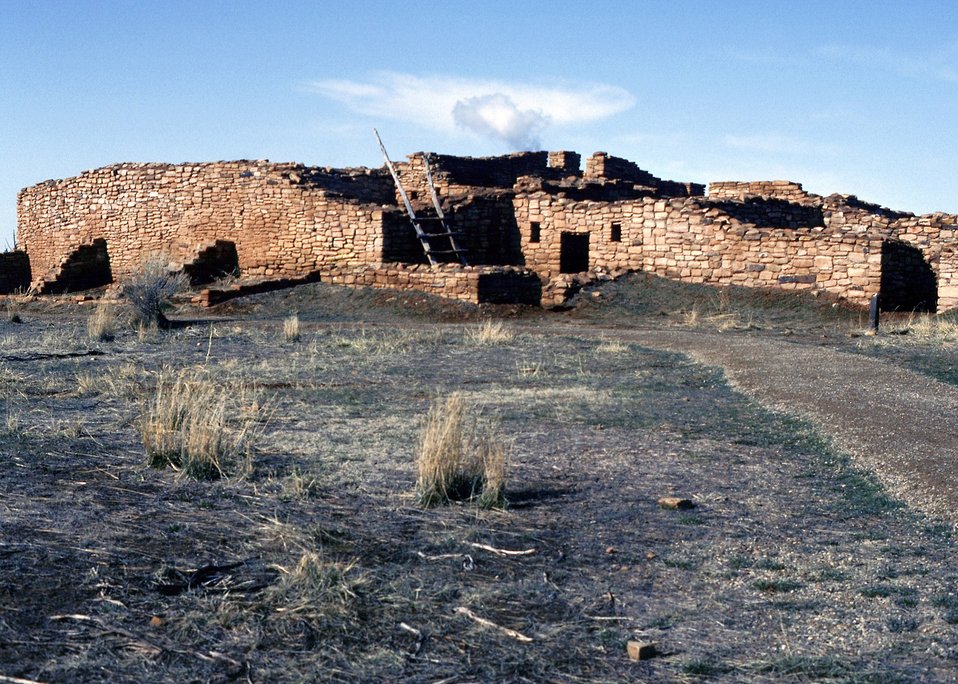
Lowry Ruin